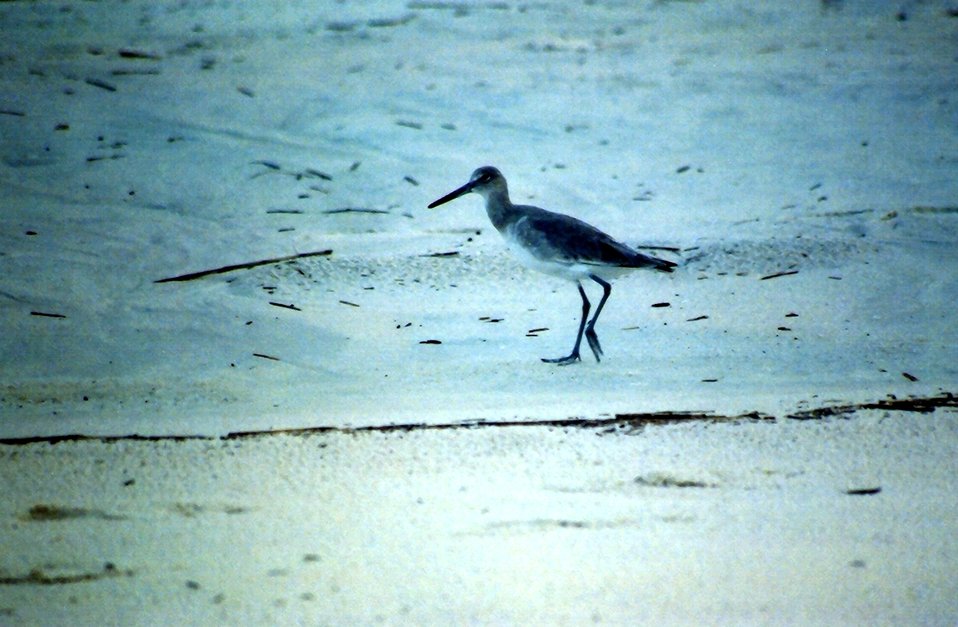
Sandpiper on the beach.